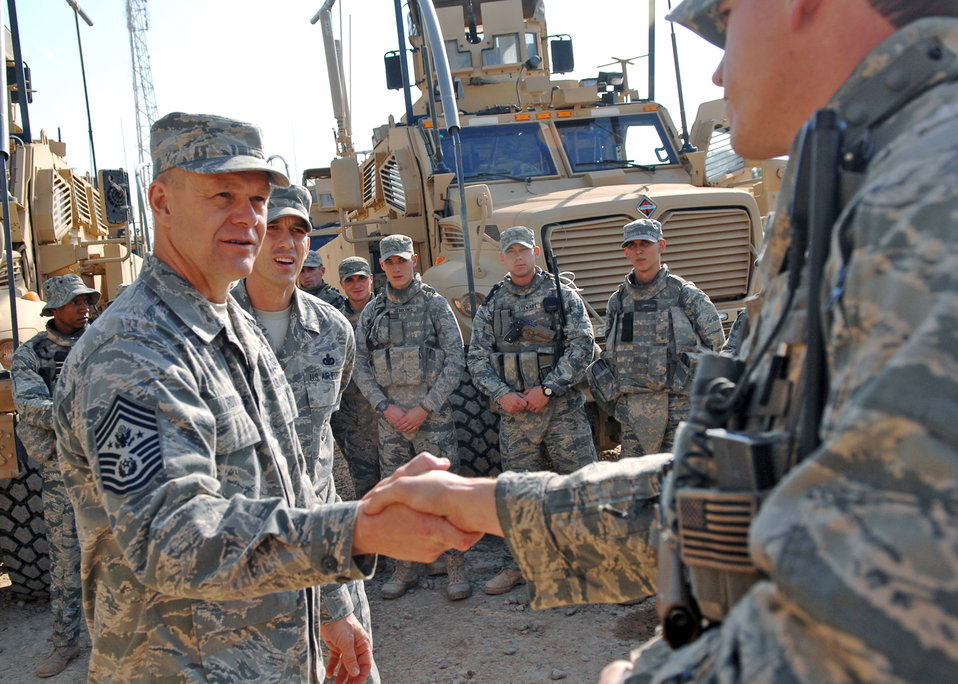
Chief master sgt. of the Air Force visits Joint Base Balad

Chief Master Sgt. of the Air Force James A. Roy meets with Airmen during a visit Dec. 4, 2009 to Joint Base Balad, Iraq. The trip was Chief Roy's first visit to JB Balad as the chief master sergeant of the Air Force. The Airmen are from the 532nd Expeditionary Security Forces Squadron.